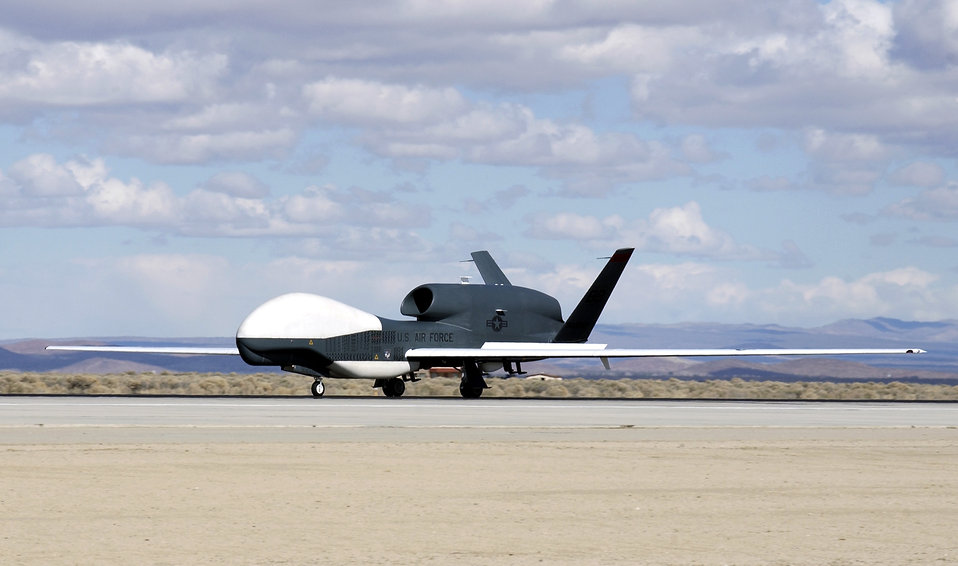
Global Hawk returns

EDWARDS AIR FORCE BASE, Calif. -- After supporting the Global War on Terror for three years, Global Hawk unmanned aerial vehicle number three (UAV-3) received its official homecoming today when its wheels touched down at 11:30 a.m. Pacific Time at Edwards Air Force Base, Calif.